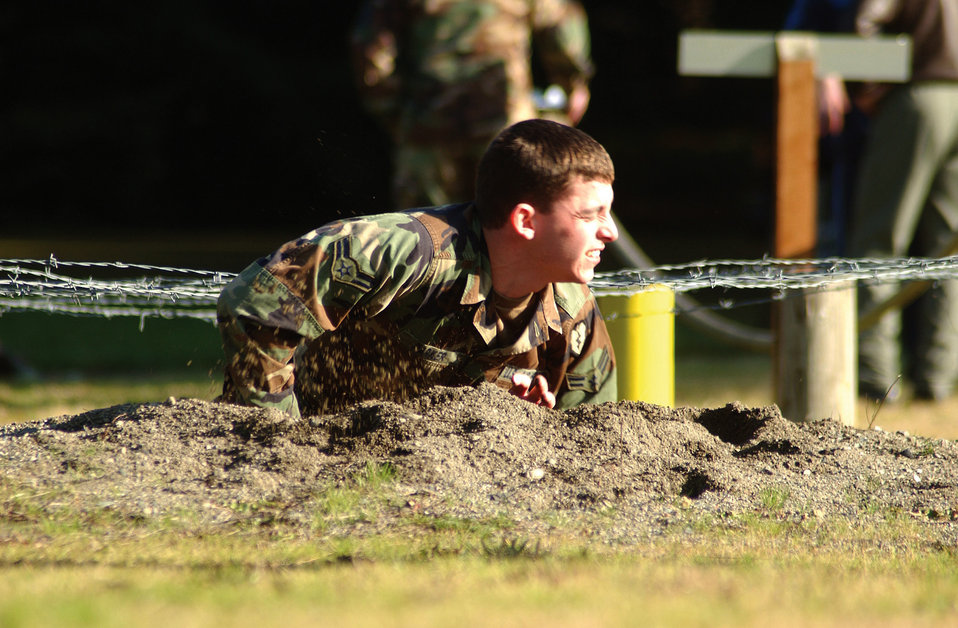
Under the wire

MCCHORD AIR BASE, Wash. -- Airman 1st Class Brandon Parker makes his way out from under the barbed wire during the obstacle course portion of Cascade Challenge here Feb. 8. Airman Parker is assigned to the 5th Air Support Operations Group. He was one of fourteen competitors who participated in this year's challenge that tested both mind and body.